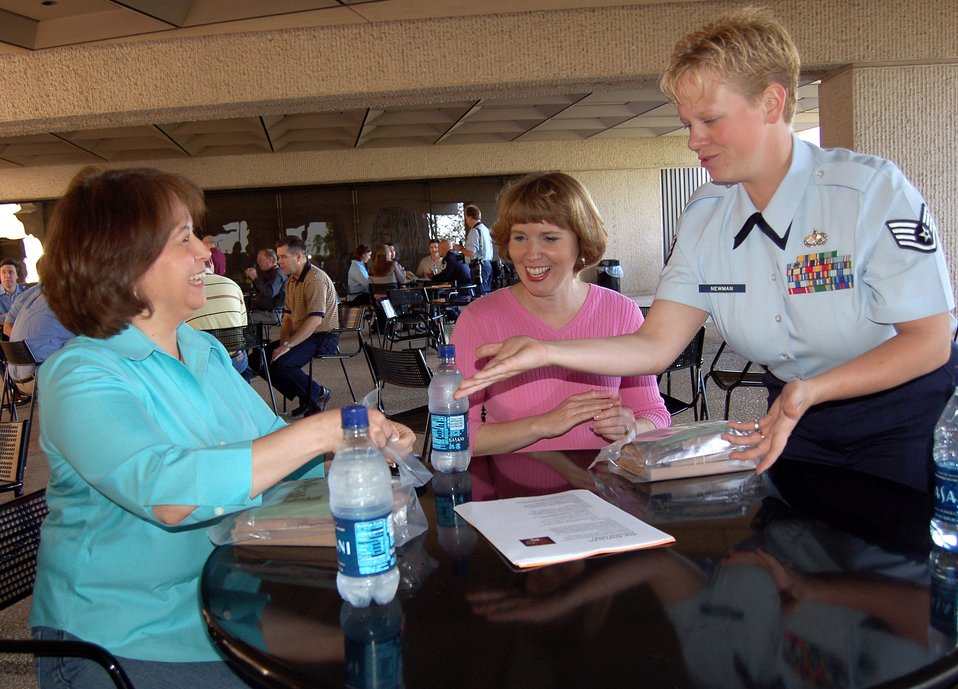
Servicemembers get chance to tell their side of story

Staff Sgt. Paula Newman helps USAA employees Liz Wagner and Mary Jane Norris prepare their Meals, Ready To Eat, at USAA in San Antonio Sept. 26. As part of the Department of Defense's